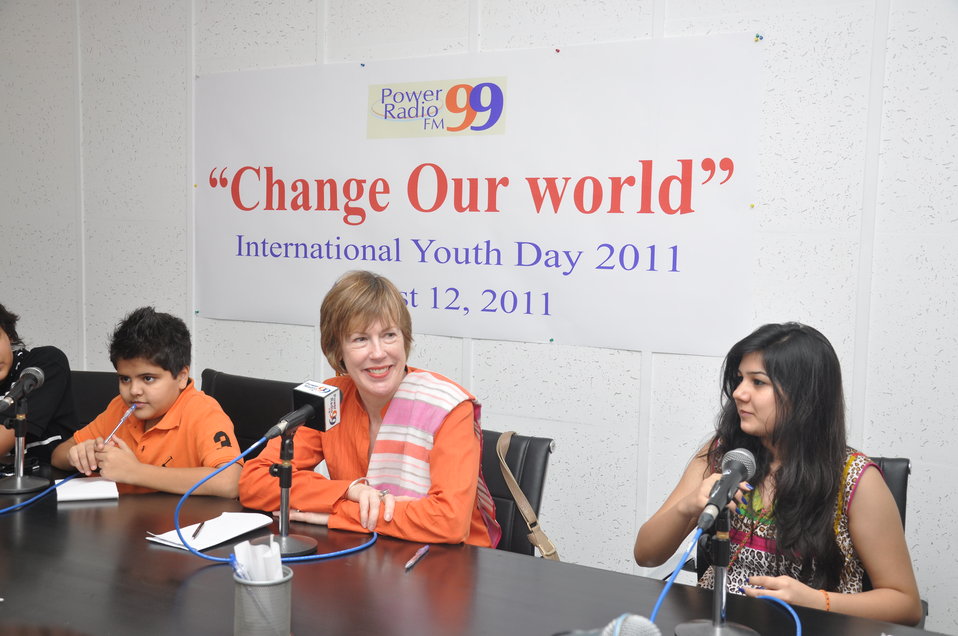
International Youth Day 2011

Islamabad, August 12, 2011 – Dr. Marilyn Wyatt, wife of U.S. Ambassador Cameron Munter, joined young people for a discussion that marked the international youth day at Power Radio FM 99.